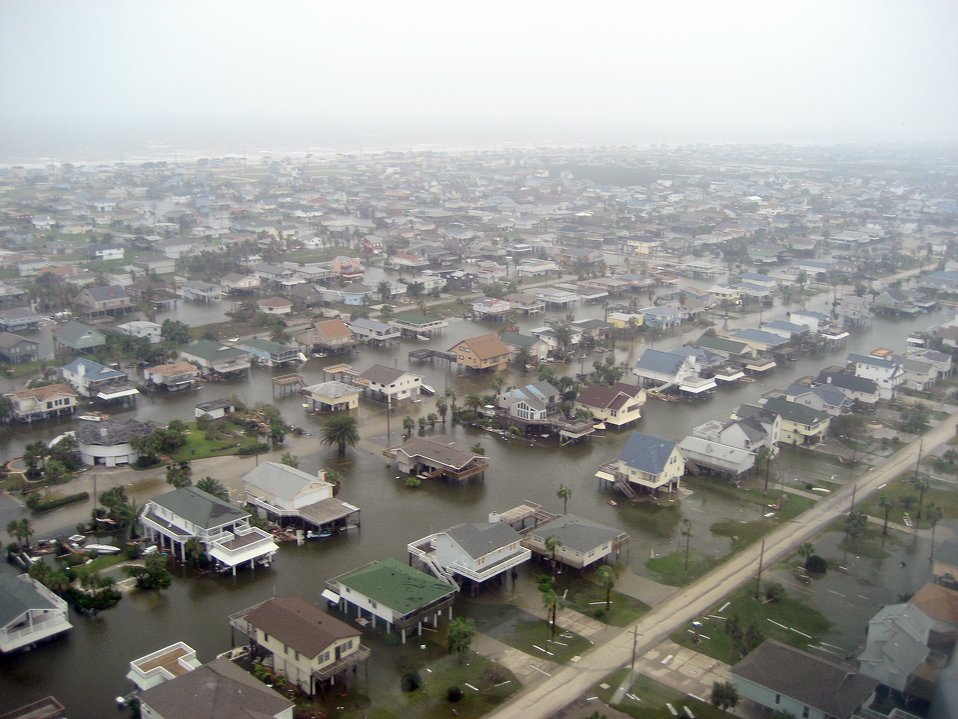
Eye in the sky

A view of Galveston Island, Texas, from a Dragonslayer 611, a SH-60F Sea Hawk helicopter, piloted by Cmdr. Mal Sandie (commanding officer HS-11) and Lt. Cmdr. Tim Kinsella survey the Texas, coastline looking for damaged areas caused by Hurricane Ike Sept. 13. The helicopters are from the Helicopter Anti-Submarine Squadron 11, Naval Air Station Jacksonville, Fla.